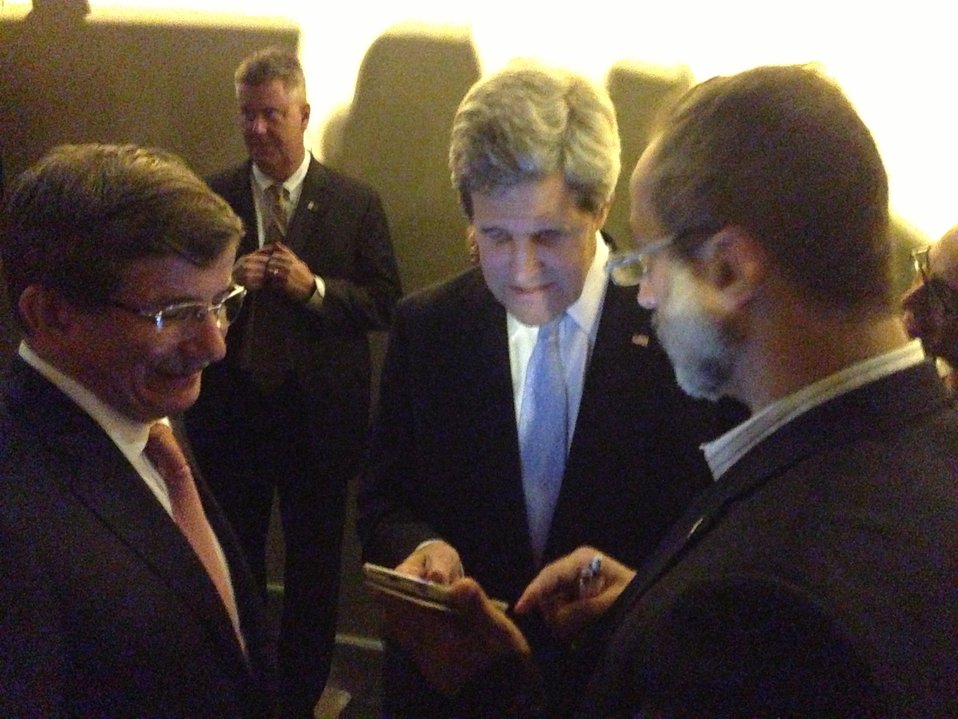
Secretary Kerry and Turkish Foreign Minister Davutoglu Look at a Photo

U.S. Secretary of State John Kerry and Turkish Foreign Minister Ahmet Davutoglu are shown a photo on a cell phone of Syrian Opposition Council Chairman Moaz al-Khatib's father at a mosque in Oman while in Istanbul, Turkey on April 21, 2013.